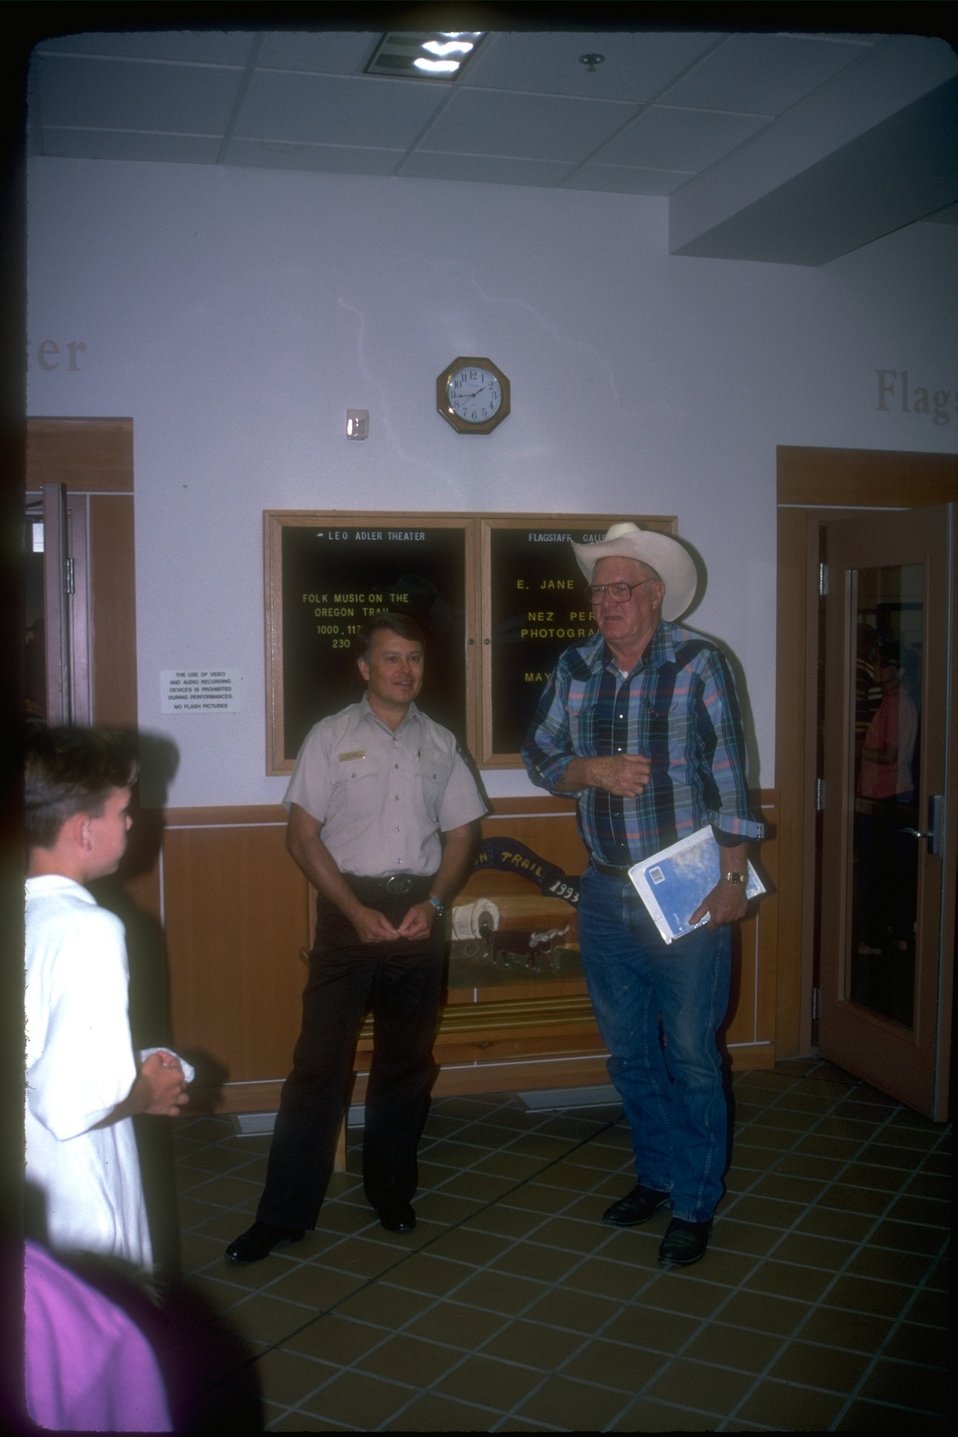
BLM employees and volunteers working together at the NHOTIC.